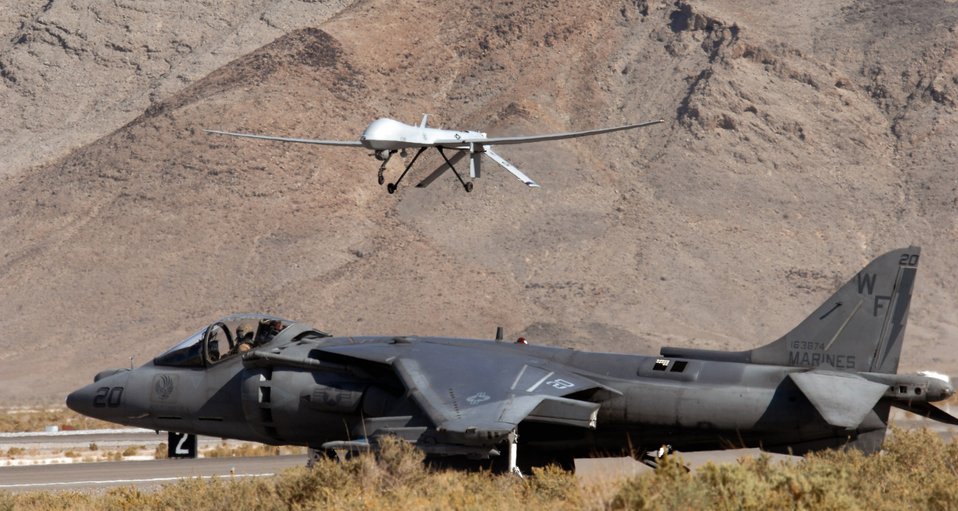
Cleared to land

A U.S. Marine Corps AV-8B Harrier waits as a MQ-1 Predator lands Nov. 7 at Creech Air Force Base, Nev. Members of the 11th Reconnaissance Squadron there teamed up with Marines assigned to Marine Corps Air Station Yuma, Ariz., for a joint training exercise.